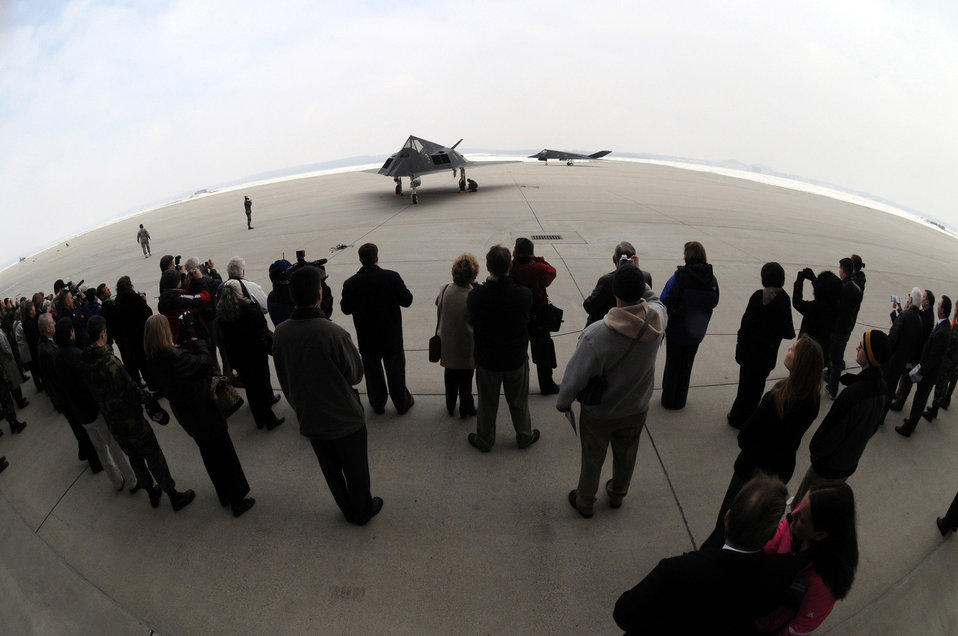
F-117 retires

A military and civilian crowd watches as two F-117 Nighthawk aircraft taxi into position during the F-117 Nighthawk farewell ceremony at Wright-Patterson Air Force Base, Ohio, March 11.